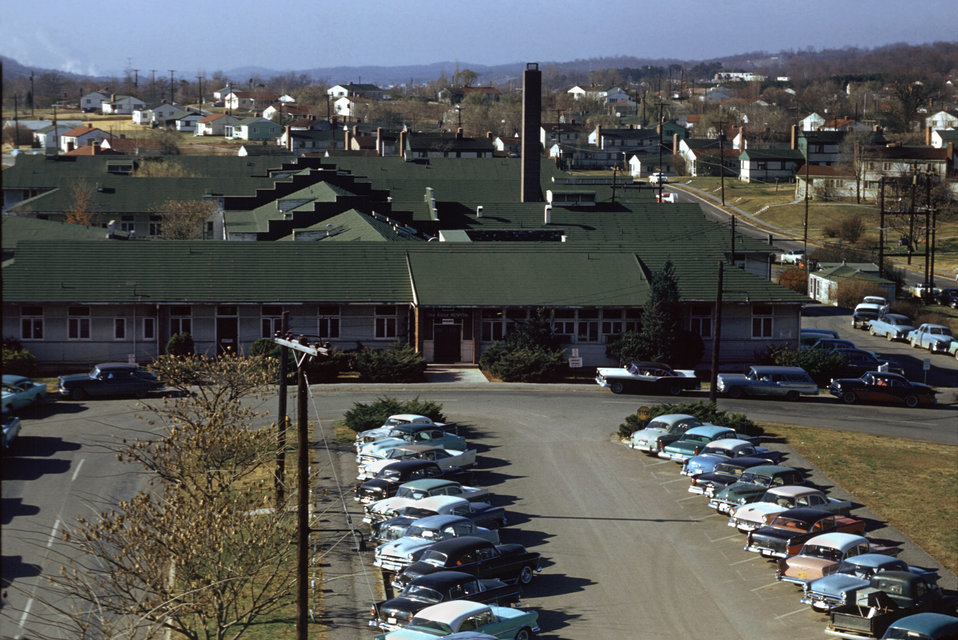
Oak Ridge 1959

DOE photo by Ed Westcott Oak Ridge Tennessee 1959